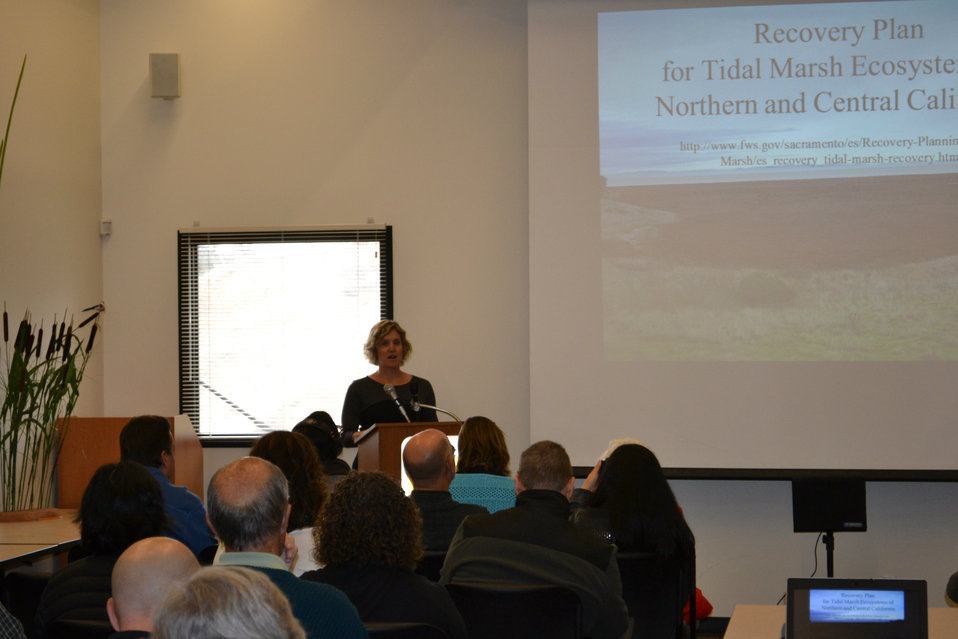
Jennifer Norris speaking at TMRP-11-14-13

Photo Credit: Doug Cordell/USFWS

The U.S. Fish and Wildlife Service was joined by the California Department of Fish and Wildlife, the Coastal Conservancy, and many other environmental organizations active in the Bay Area to celebrate the finalization of the Recovery Plan for Tidal Marsh Ecosystems in Northern and Central California.

Here Jennifer Norris, Field Supervisor for the USFWS's Sacramento Field Office speaks to the group.